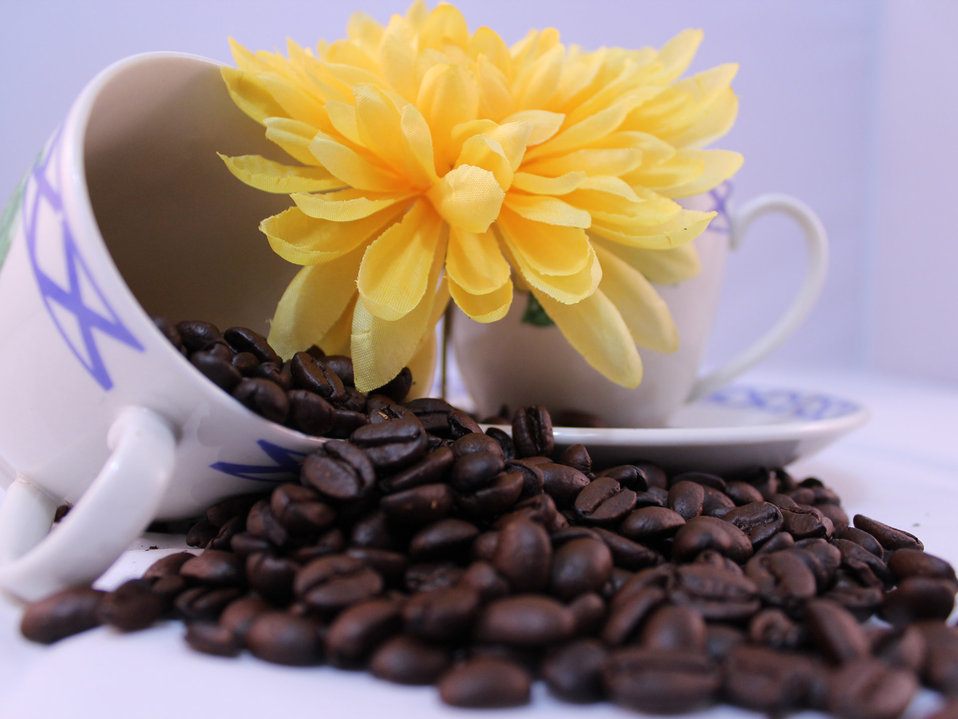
Teacup coffee flower

A set-up using teacups, coffee beans and a flower..